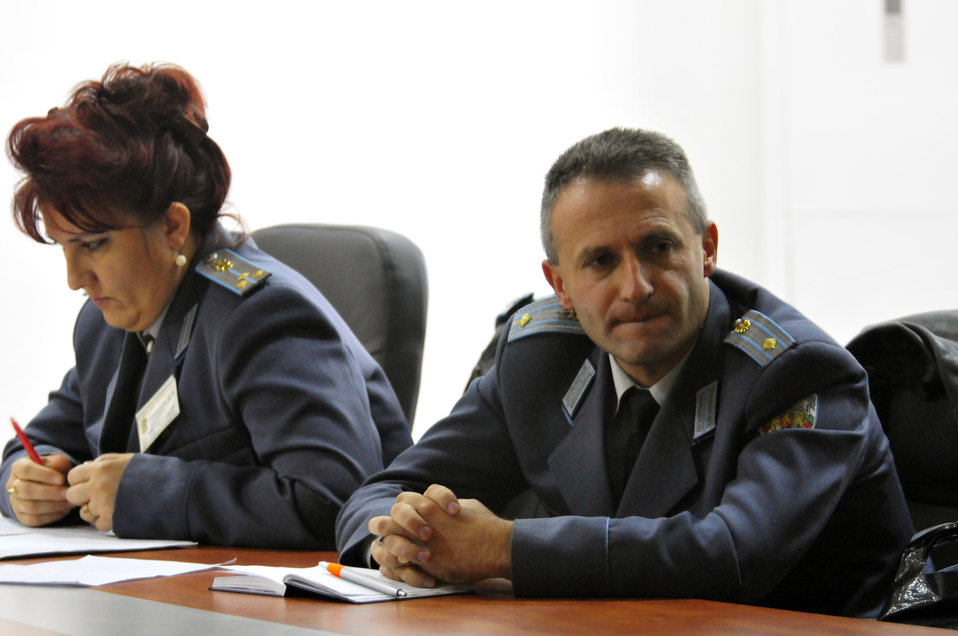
Fall Thracian 2010

Bulgarian air force officers attend a round-table discussion on the history and future of flight medicine during Exercise Thracian Fall 2010 Oct. 19, 2010, at Graf Ignatievo Air Base, Bulgaria. Airmen from U.S. Air Forces in Europe met for Thracian Fall 2010, an on-site training designed to build the partnership between the U.S. and Bulgarian air force.